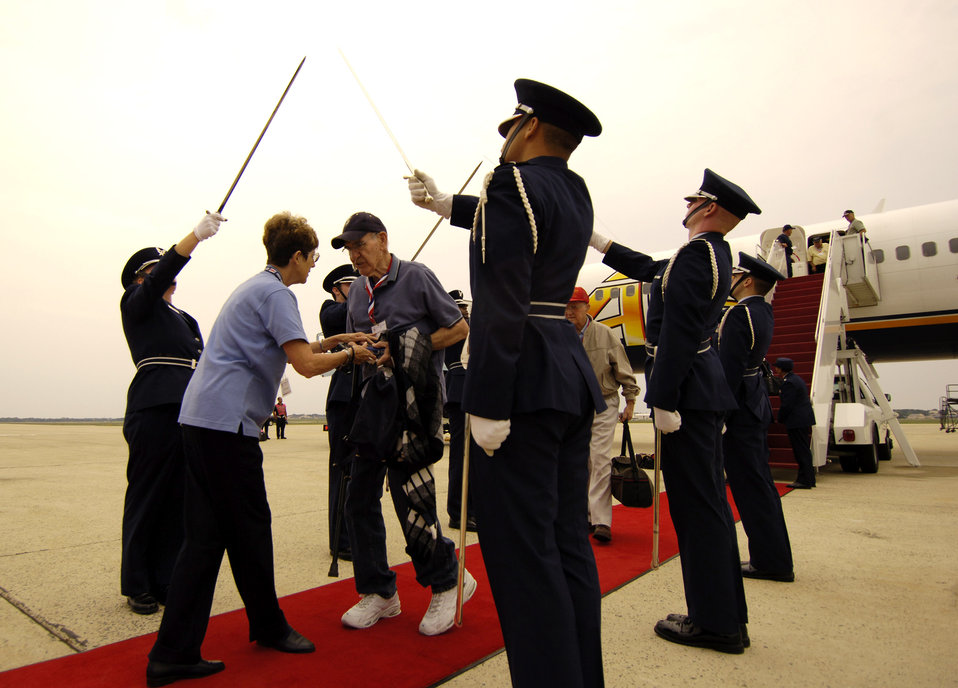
Hero Flight transports 122 WW II veterans in 2007

More than 120 World War II veterans participating in Hero Flight 2007 are greeted by the honor guard at Andrews Air Force Base, Md., Sept. 14. Hero Flight is an all-volunteer program that sets up trips to allow as many World War II veterans as possible to visit the National World War II Memorial.